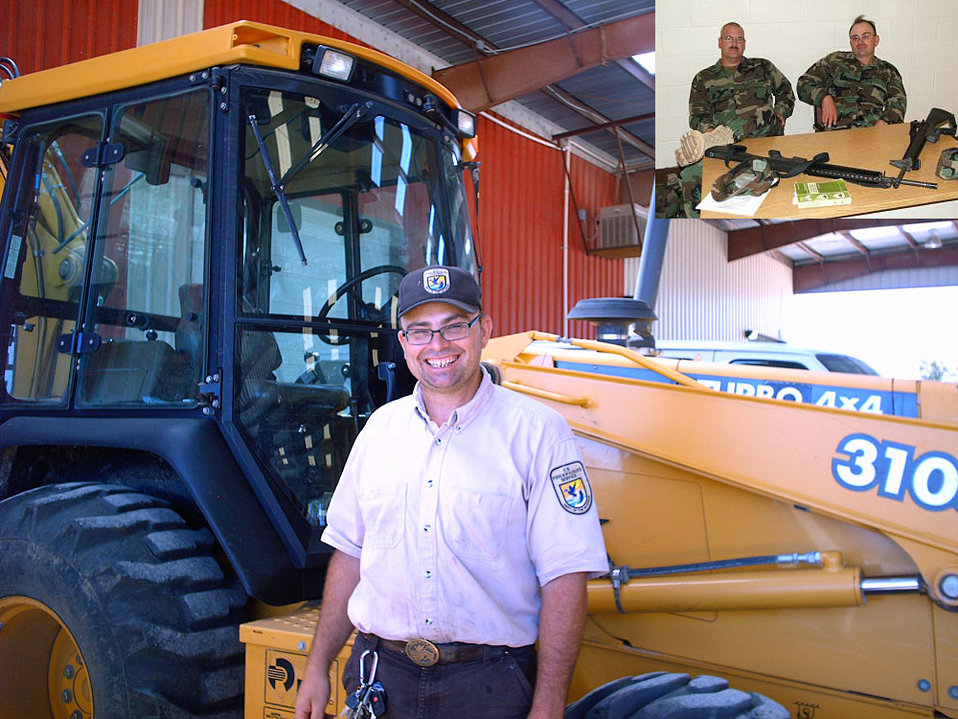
Jeremy Reichle

Jeremy Reichl was in the Army Reserve 244th Engineer Company, the U.S. Navy SEABEES and the Colorado Army National Guard 947th Engineer Company. Today, he is an Engineer Equipment Operator and Wildland Firefighter (collateral), proudly working alongside other resource specialists and firefighters to protect natural resources. (He is on the right in the smaller photo.)